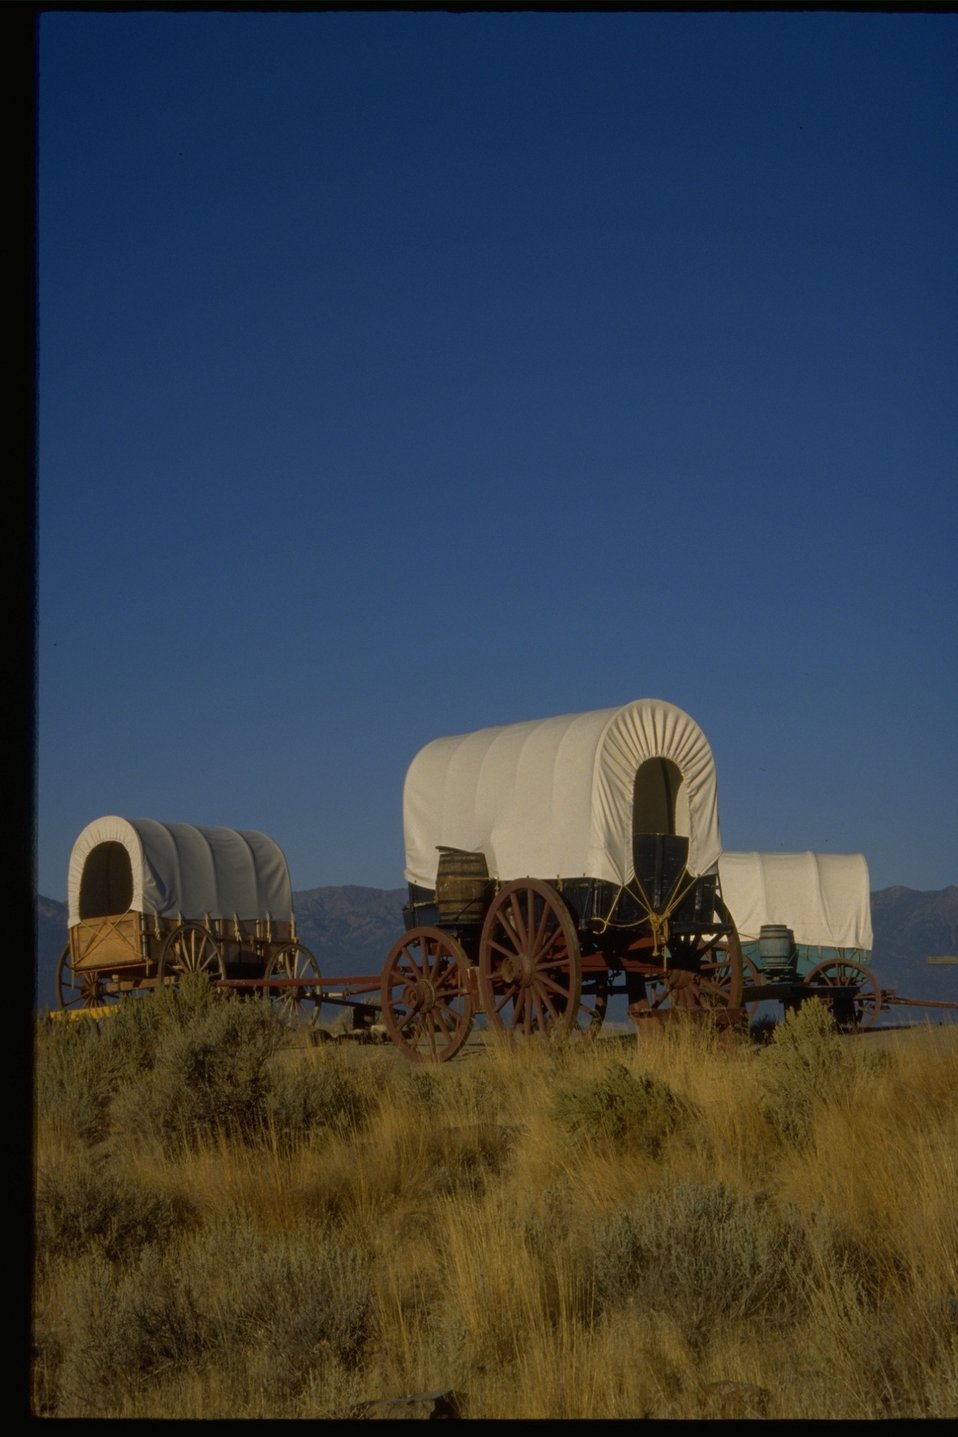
Wagons outdoors near the NHOTIC.